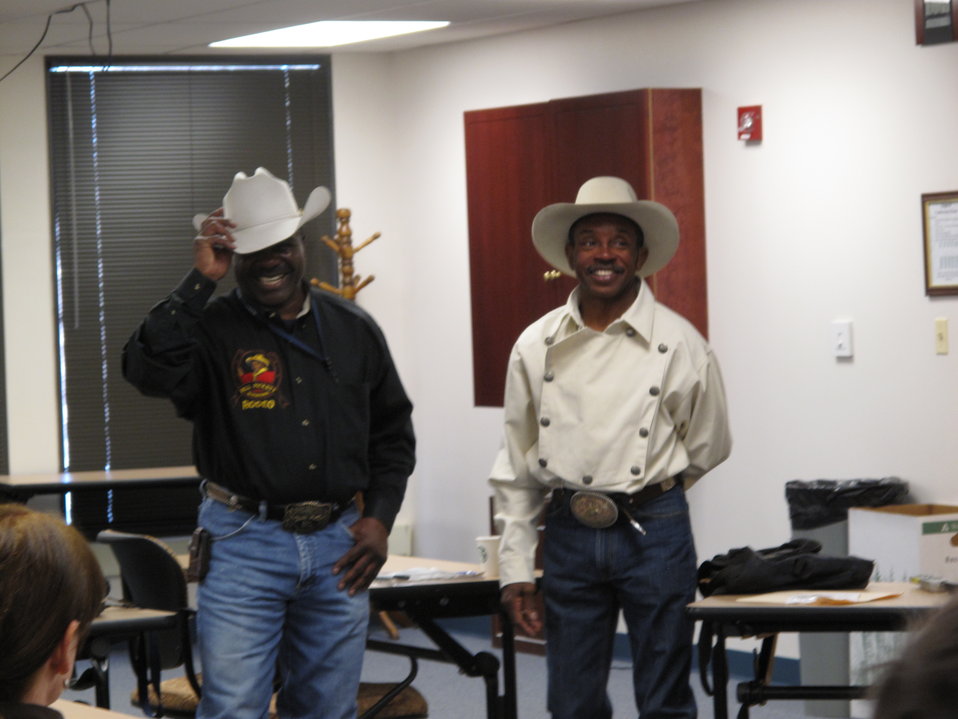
Speakers Introduction

Maurice Wade tips his hat when introduced as he stand next to Charles Sampson.